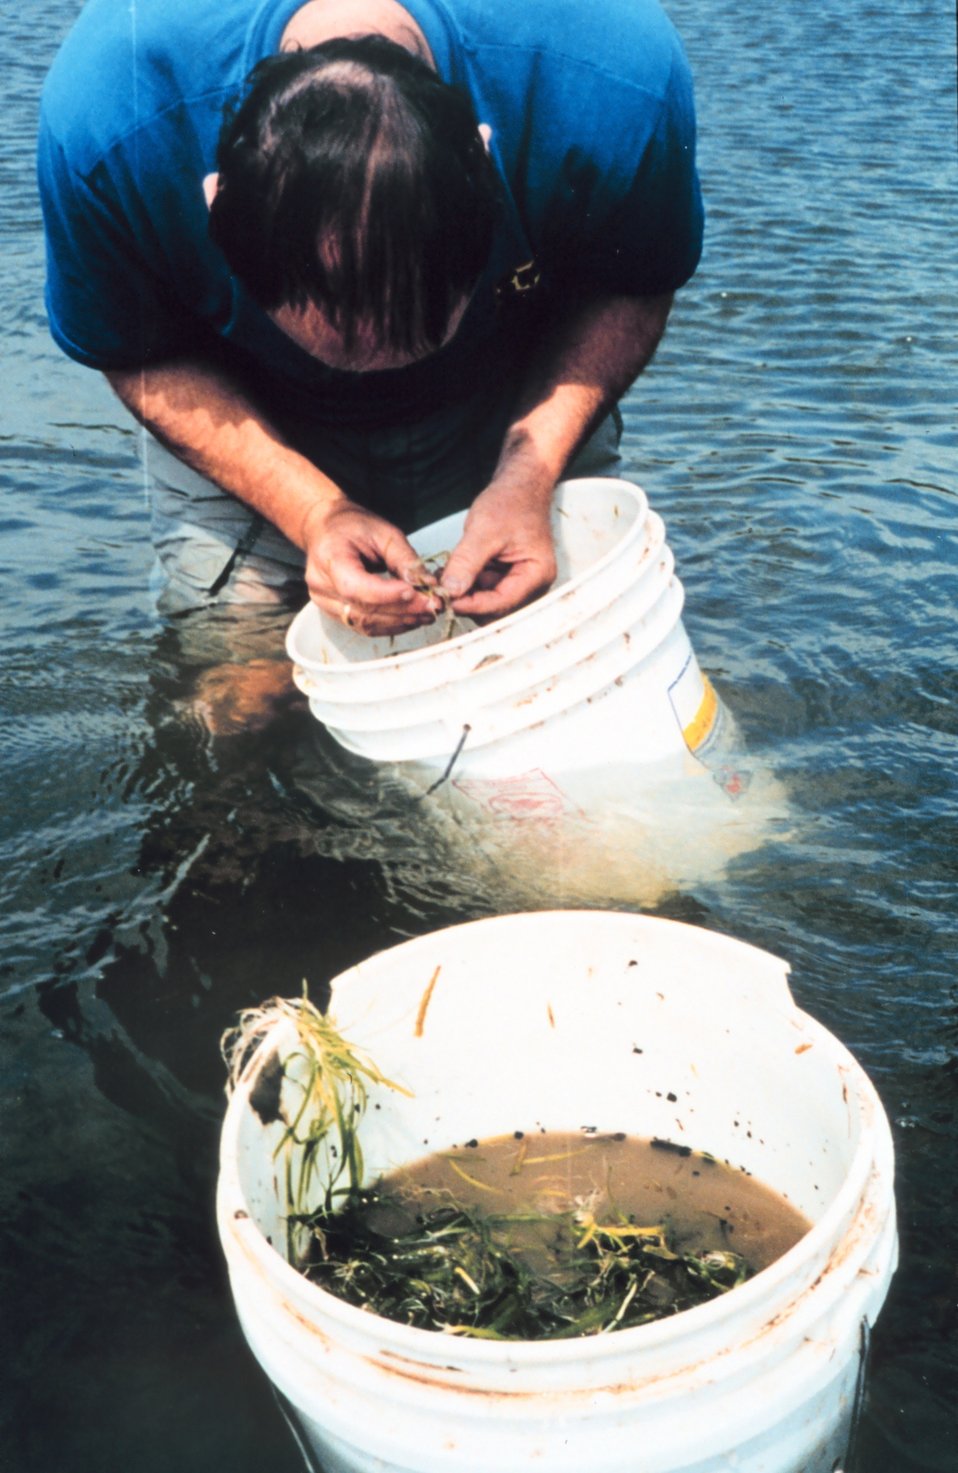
Planting 'homegrown' wild celery plants as part of Chesapeake Bay Foundation 'Bay Grasses for the Masses.'